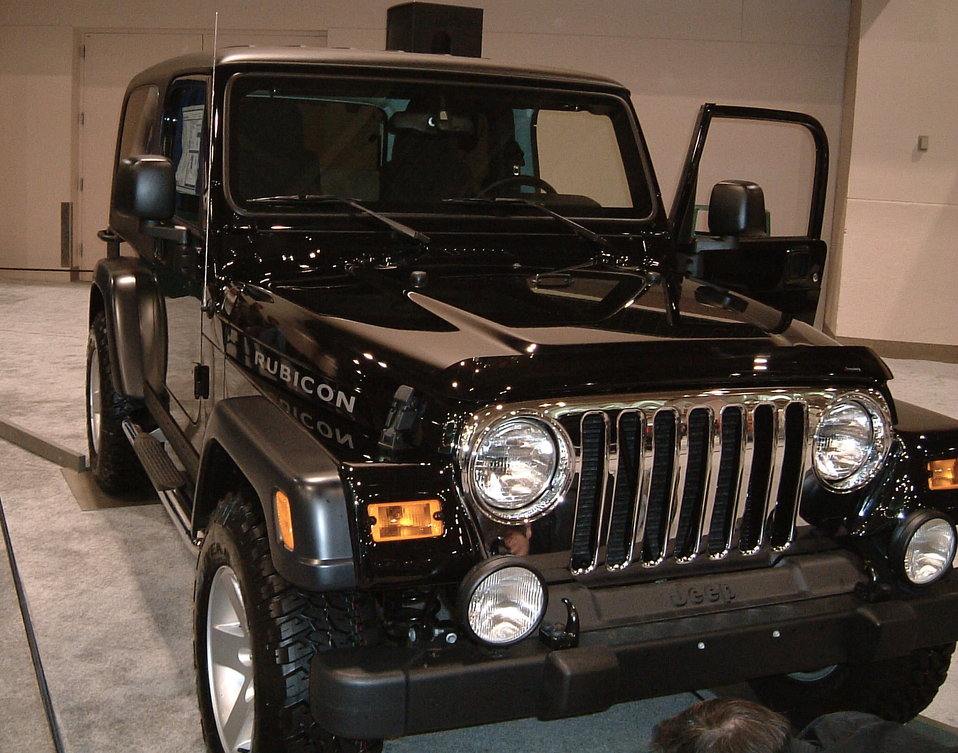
jeep wrangler rubicon